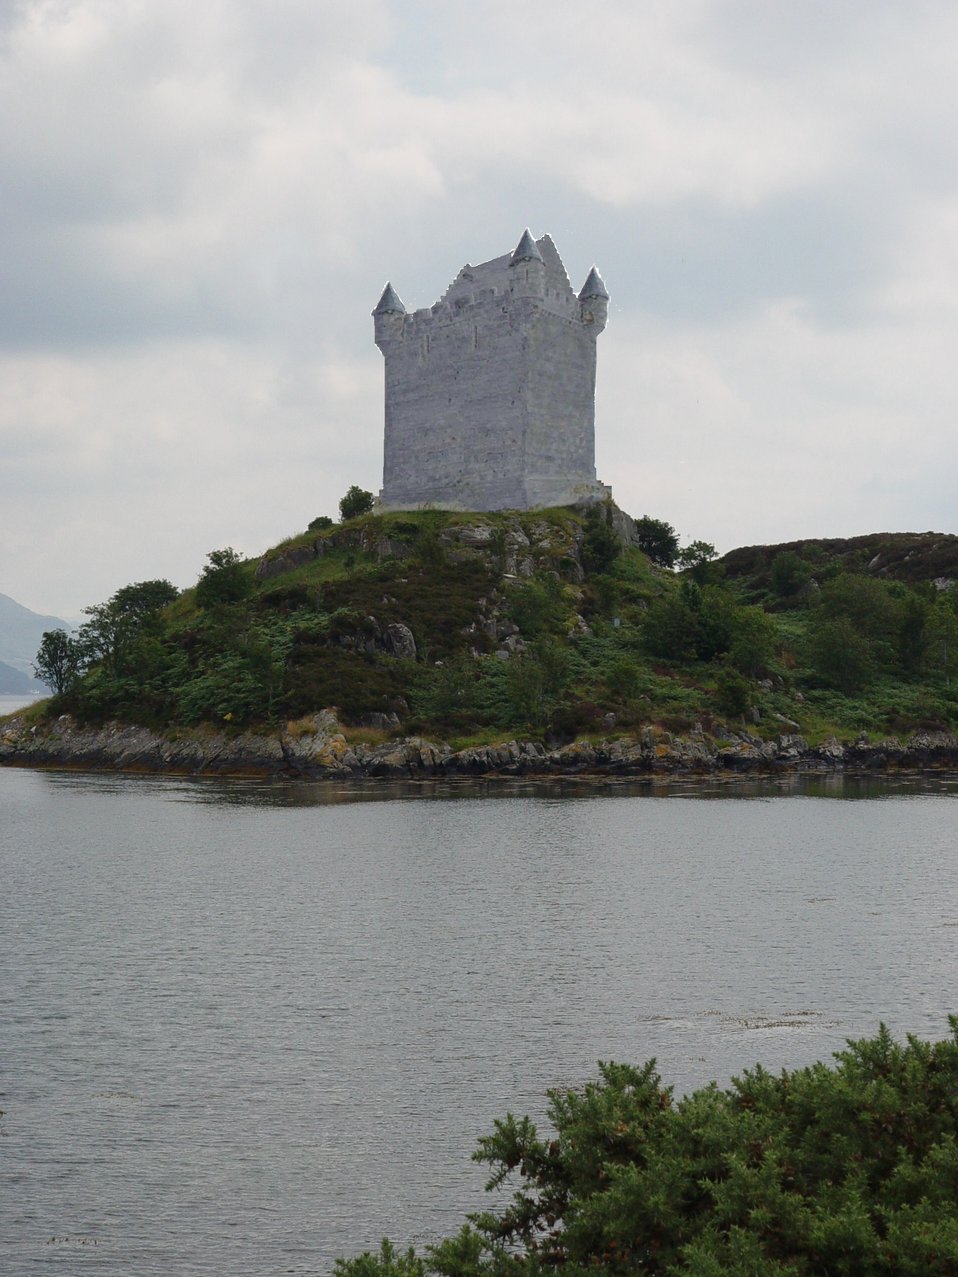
A probable recreation of the exterior of Caisteal Maol (Dunakin) Castle, Isle of Skye, Scotland in its early 16th century form. Based on various descriptions, this graphic was created by the author. The top level of the structure is speculation but based on the available evidence. The main reference sources are the the Skye & Lochalsh District Council's Museums Service.